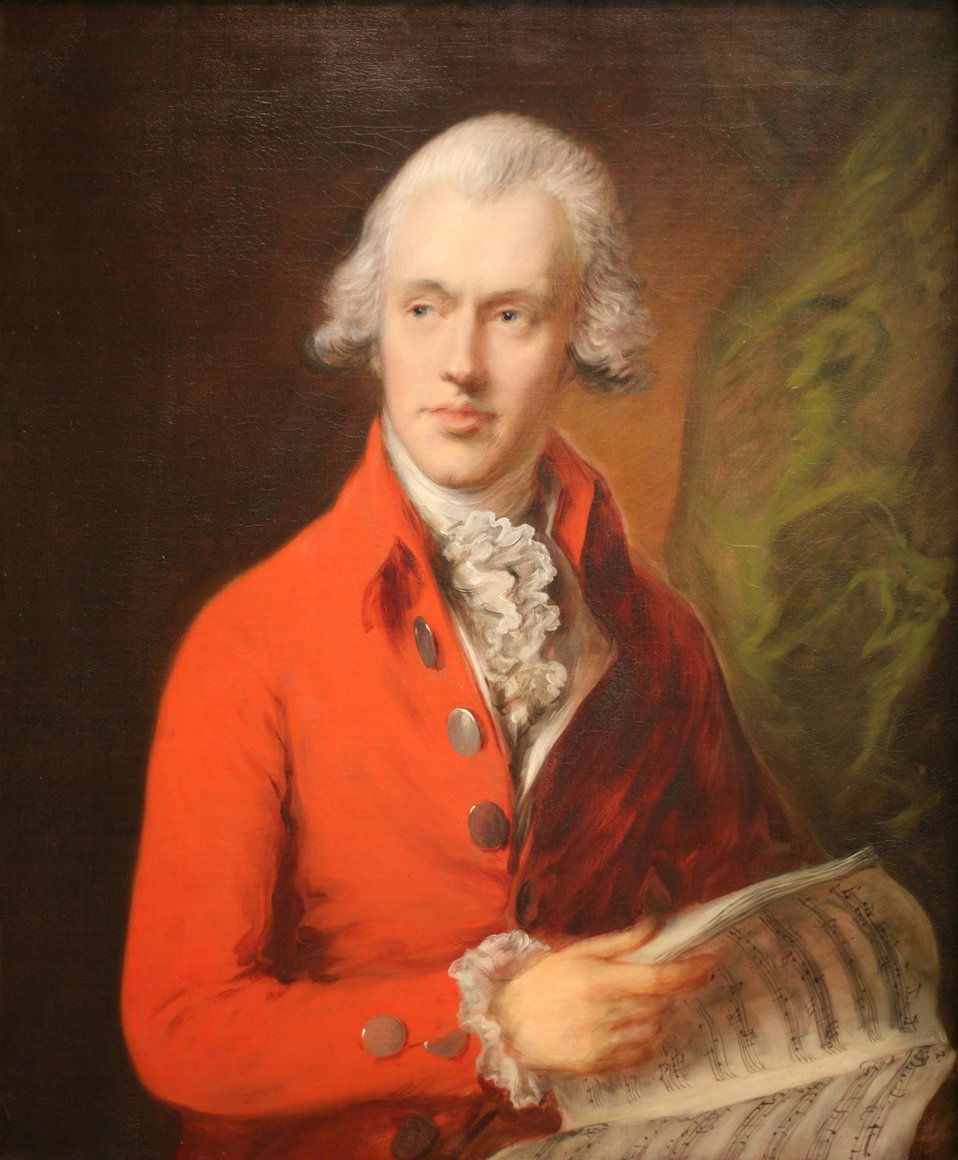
WLA metmuseum Charles Rousseau Burney by Thomas Gainsborough